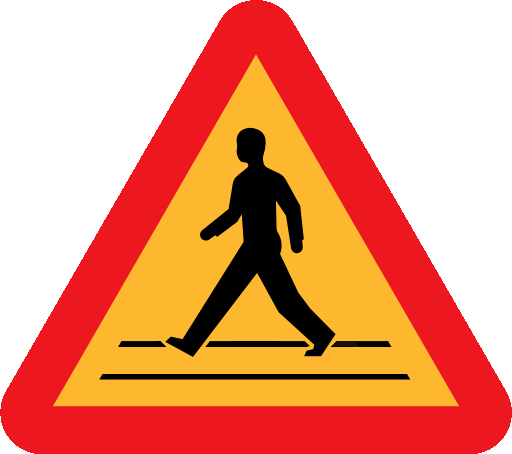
1 1 40a